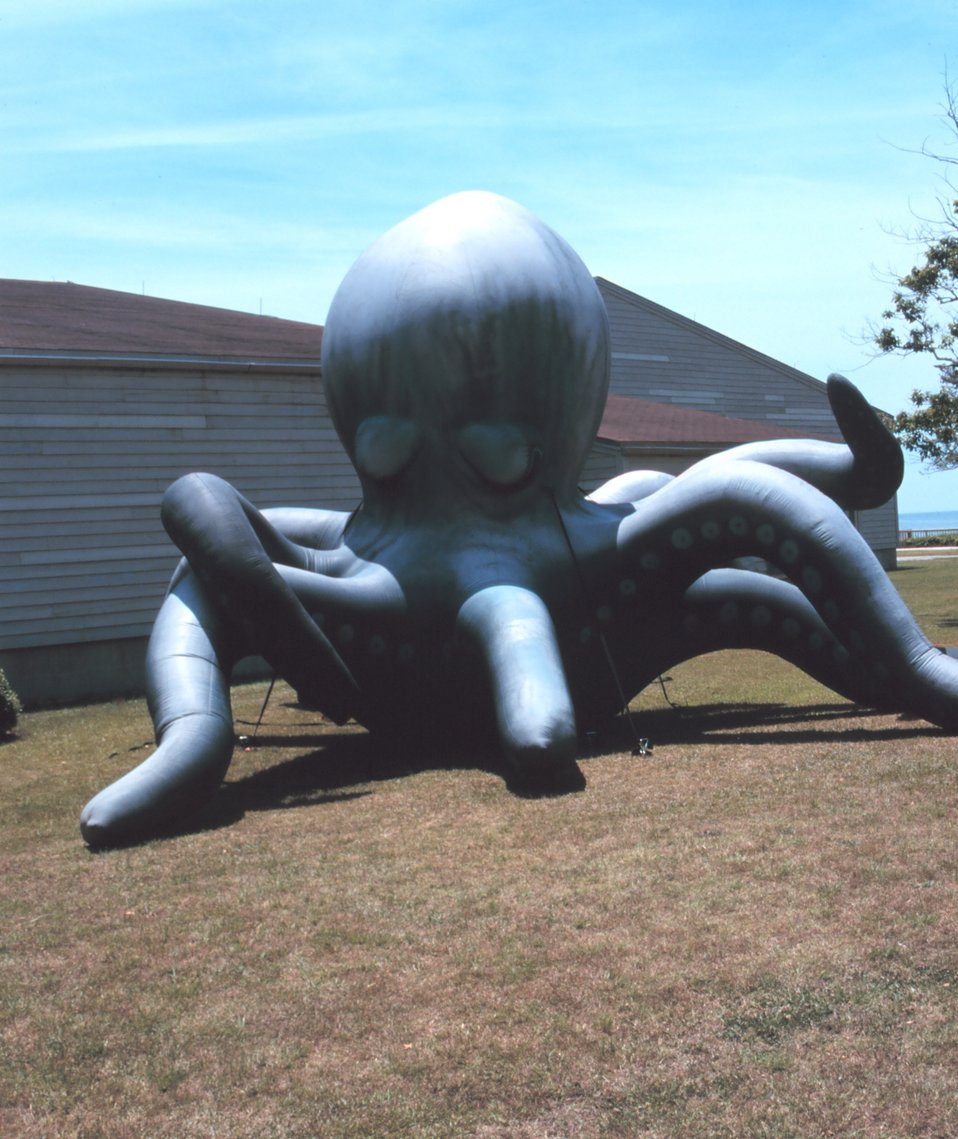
Fish art - a sculpture of an octopus at the Roanoke Island Aquarium